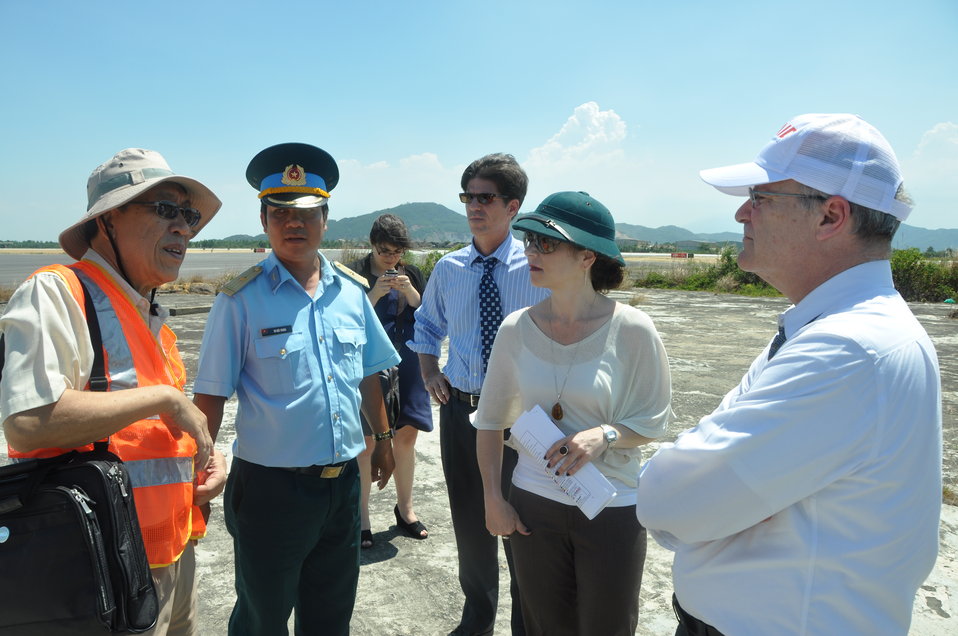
USAID Deputy Administrator Donald Steinberg and delegation visit Danang Airport

USAID Deputy Administrator Donald Steinberg Visits Vietnam